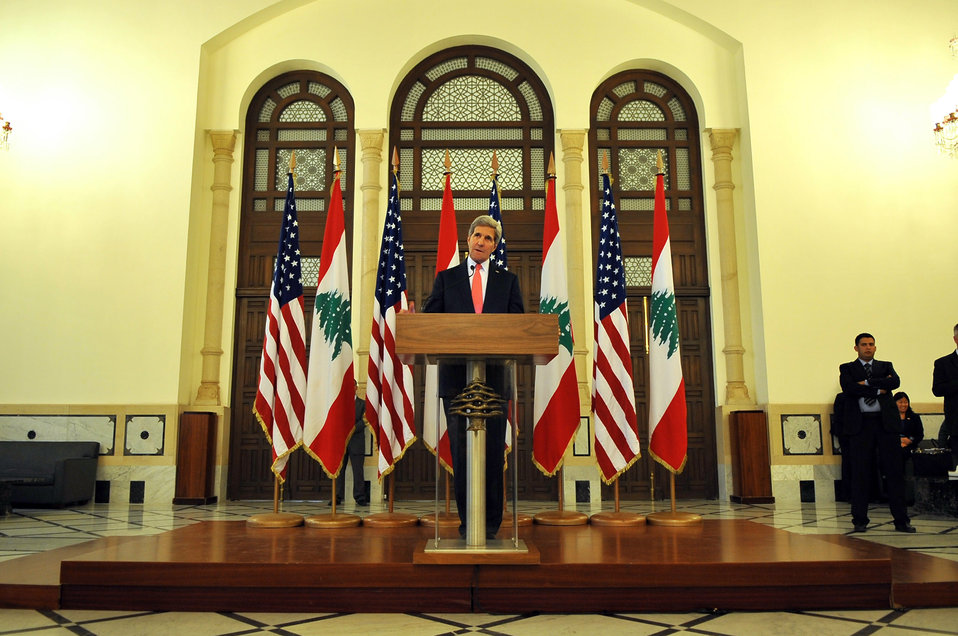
Secretary Kerry Holds News Conference at Lebanese Prime Minister's Office

U.S. Secretary of State John Kerry holds a news conference after meeting with Lebanese Prime Minister Tammam Salam in Beirut, Lebanon, on June 4, 2014.